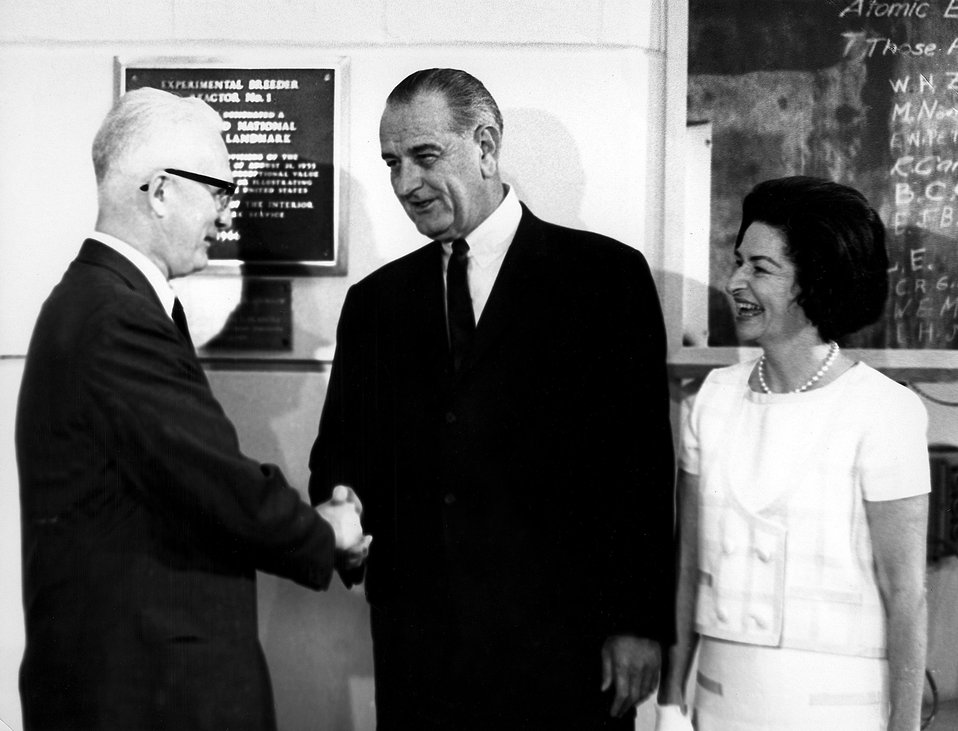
President Lyndon B. Johnson.